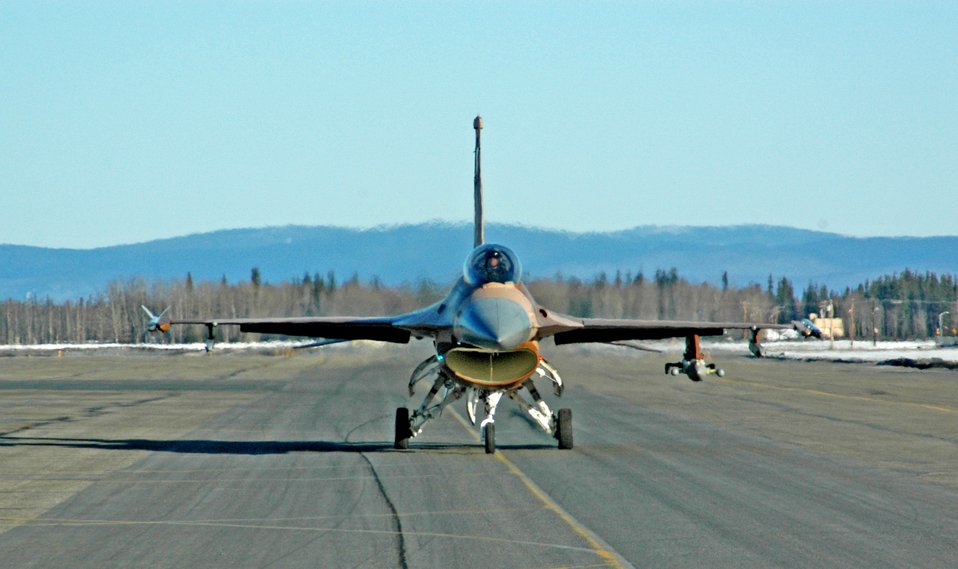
Red Flag-Alaska strengthens coalition forces

An F-16 Fighting Falcon from the 64th Aggressor Squadron at Nellis Air Force Base, Nev., taxis down the runway at Eielson AFB, Alaska, April 6 for a Red Flag-Alaska 07-1 orientation flight. The exercise, formerly known as Cope Thunder, provides joint offensive counter-air, interdiction, close-air support and large-force employment training in a simulated combat environment. Red Flag-Alaska runs through April 20. .